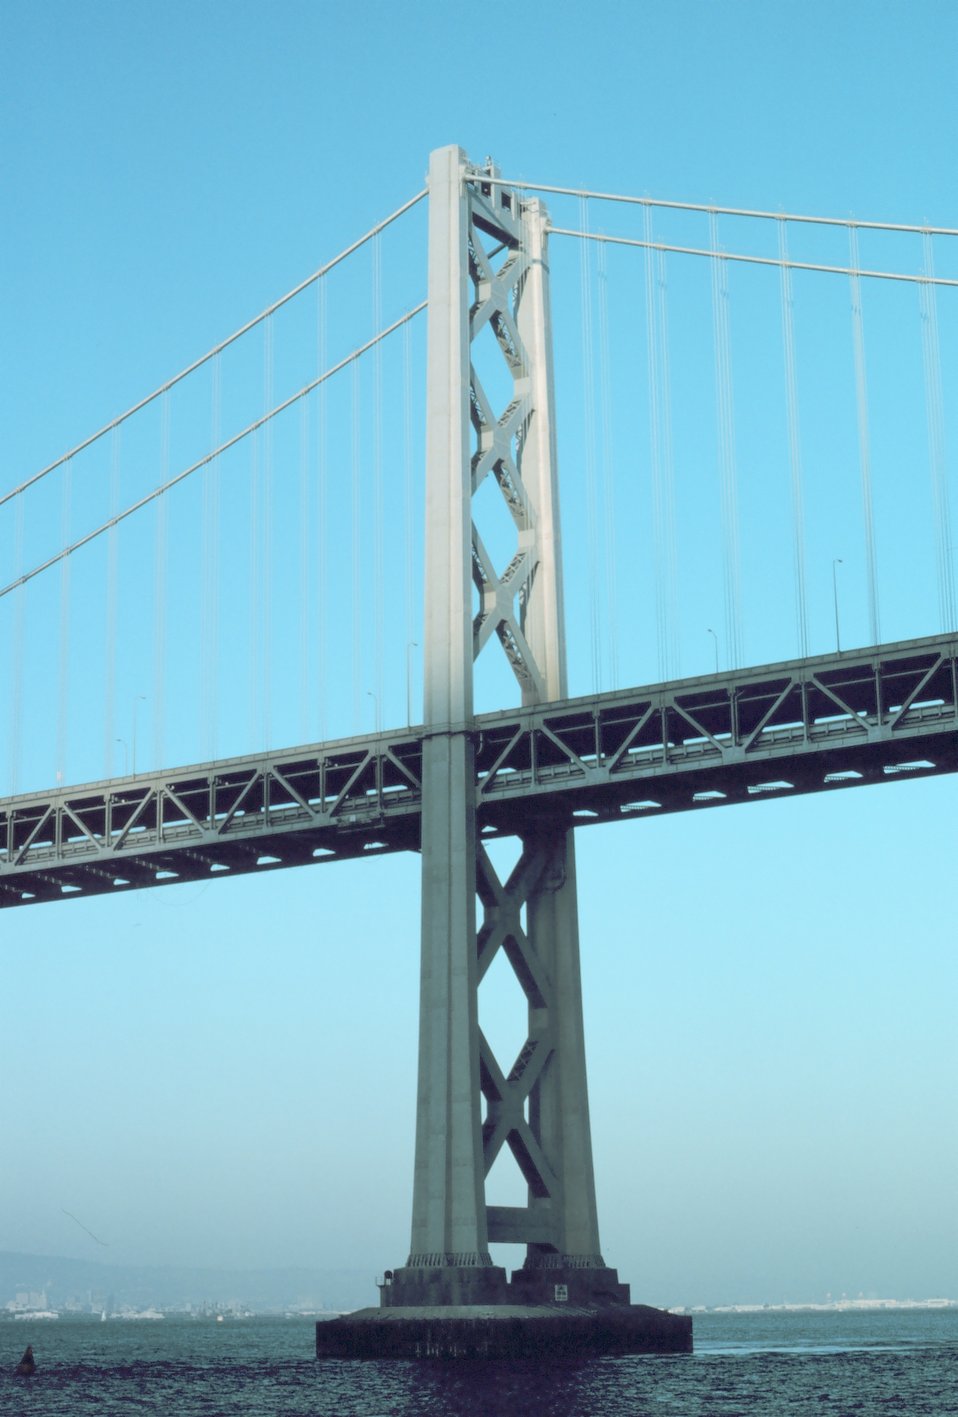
A tower of the San Francisco-Oakland Bay Bridge.